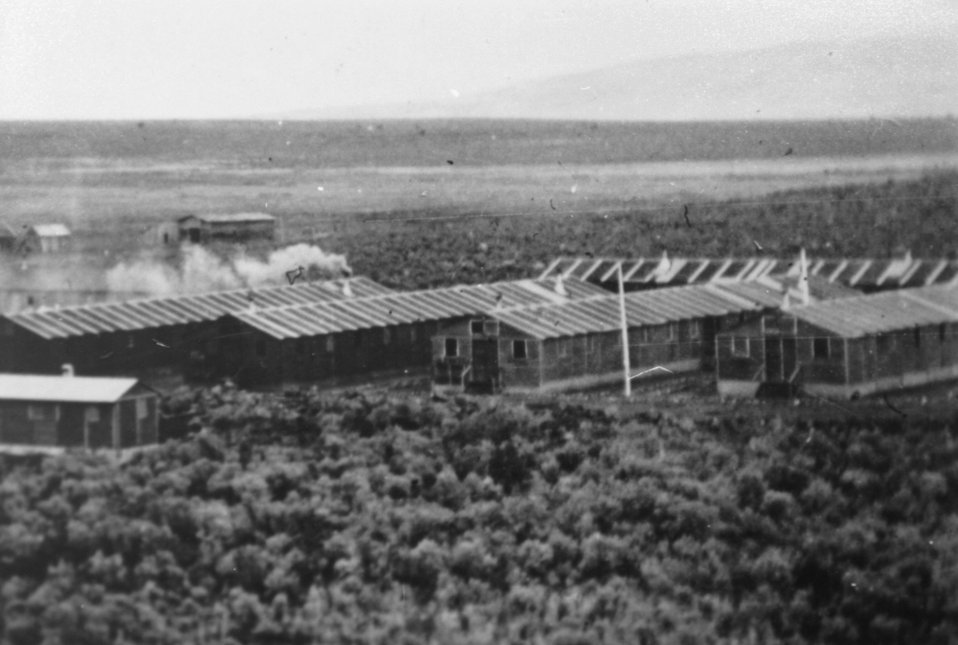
CCC camp barracks at Gap Ranch near Riley, Oregon. $ long buildings are sleeping quarters for 50 men each. circa 1940 Photo Joe Urbanek